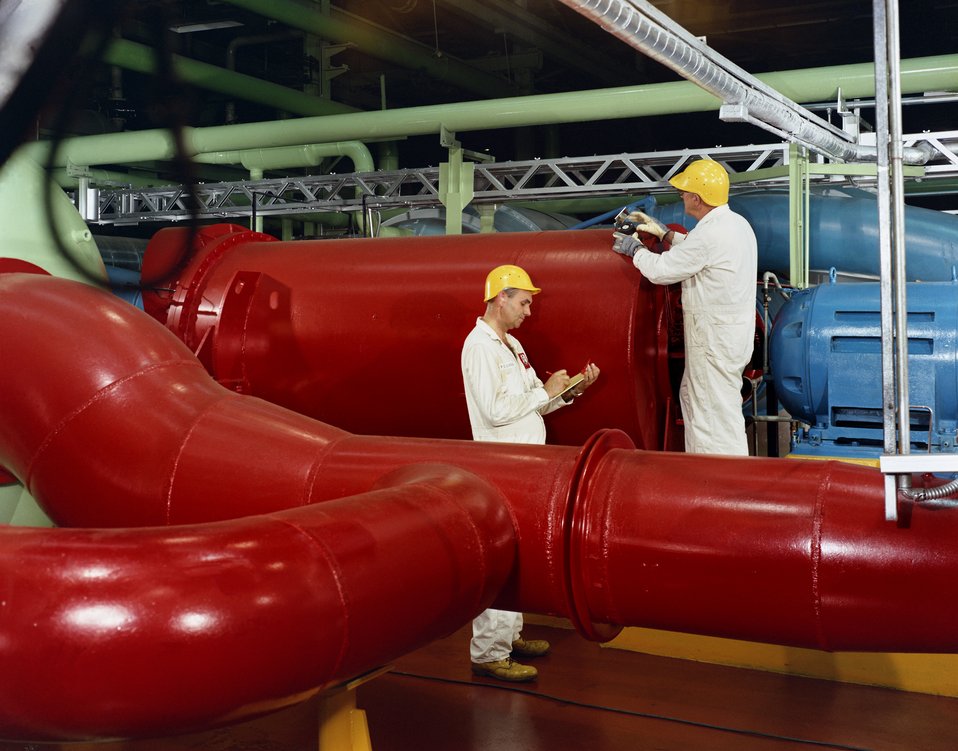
Vibration Testing K-29 1967 Oak Ridge

67-105 DOE phpoto Frank Hoffman 3-1967 Oak Ridge Tennessee